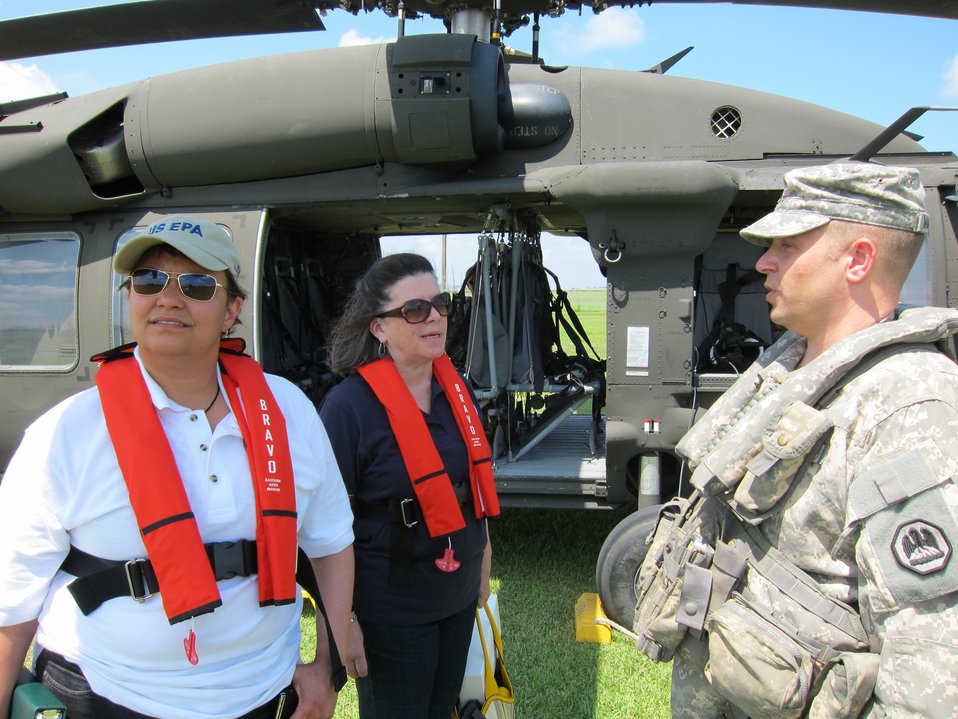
EPA Administrator Jackson at Grand Isle

June 11, 2010 - EPA Administrator Lisa P. Jackson with Blackhawk helicopter at Grand Isle, Louisiana.